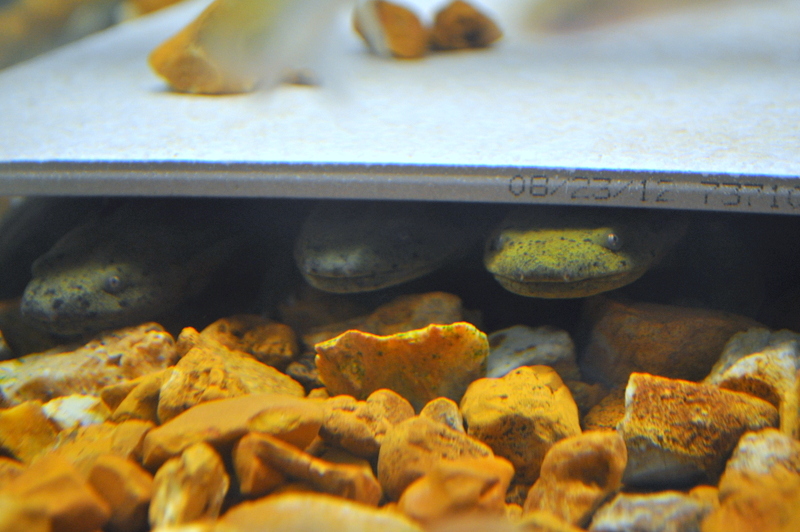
Juvenile Ozark Hellbenders